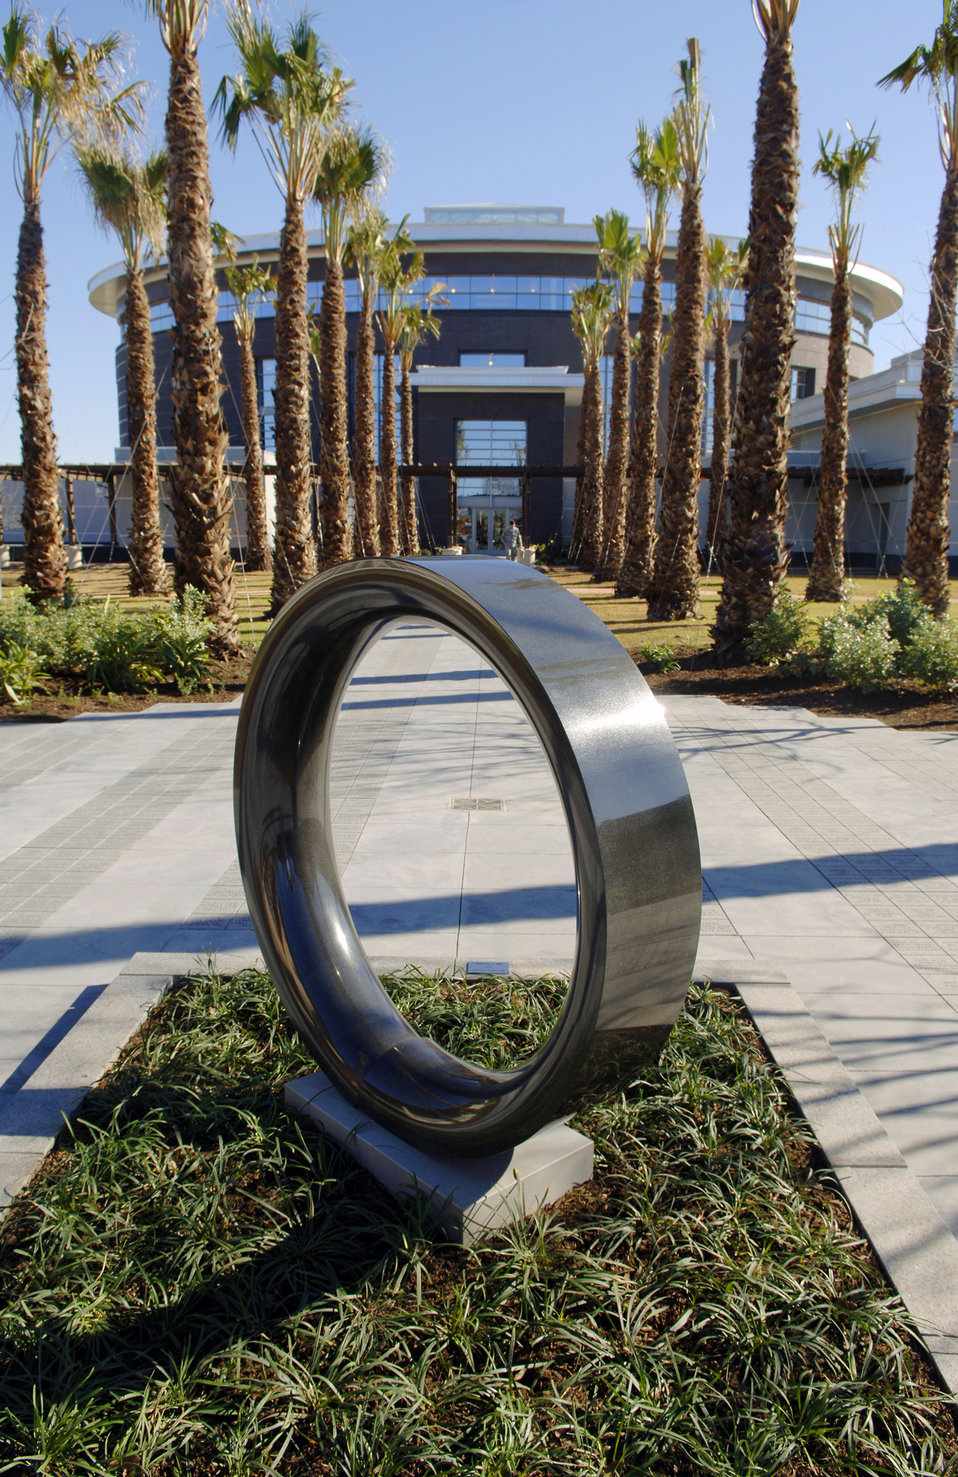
Center for Intrepid dedicated

The symbol of a damaged ring, cracked but still intact, marks the entrance to the new Center for the Intrepid, a 65,000 square foot rehabilitation center next to Brooke Army Medical Center in San Antonio, Texas.